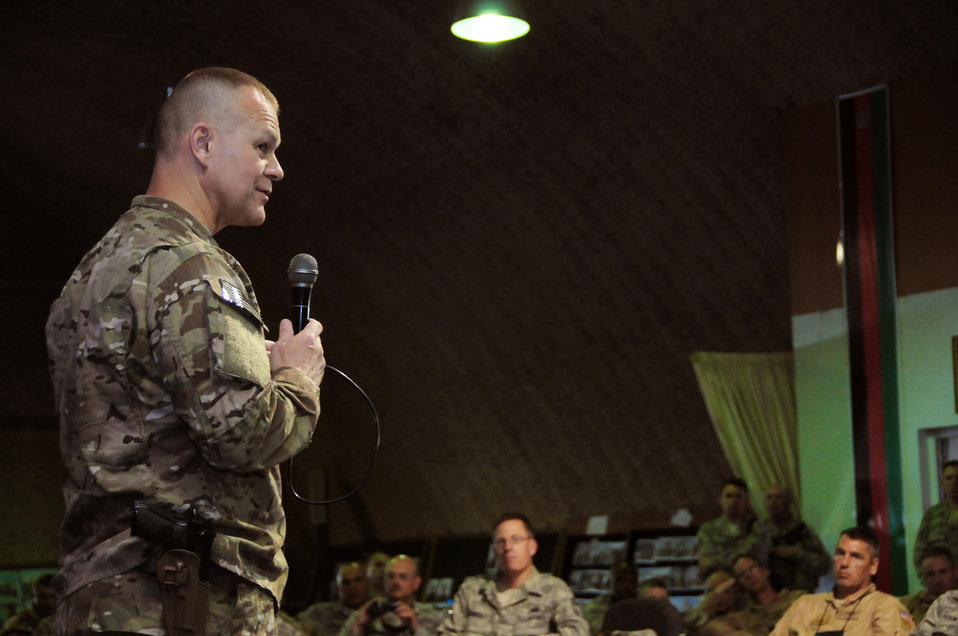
Chief Roy

Chief Master Sgt. of the Air Force James A. Roy speaks to Airmen June 17, 2011, at the Afghan air force compound in Kabul, Afghanistan.